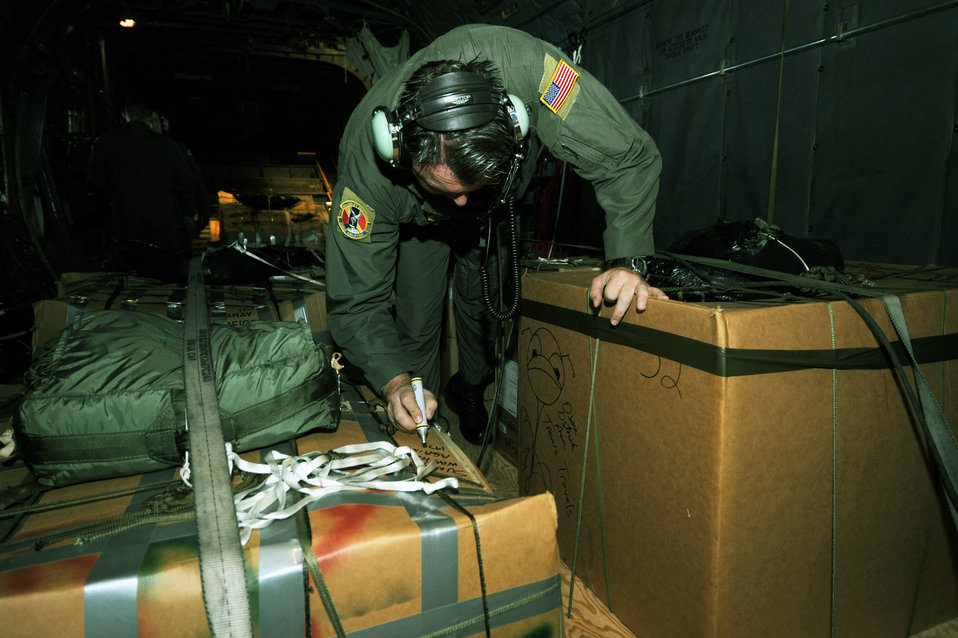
Operation Christmas Drop

Chief Master Sgt. Michael Sundberg writes a holiday greeting on a pallet of goods to be dropped from a C-130 Hercules during Operation Christmas Drop Dec.19 over the Pacific Ocean. Airmen today continue the tradition, delivering supplies to remote islands of the Commonwealth of the Northern Marianas Islands, Yap, Palau, Chuuk and Pohnpei. More than 600 pounds of donated goods was dropped over the remote islands during the operation. Chief Sundberg is a loadmaster from the 36th Airlift Squadron from Yokota Air Base, Japan.